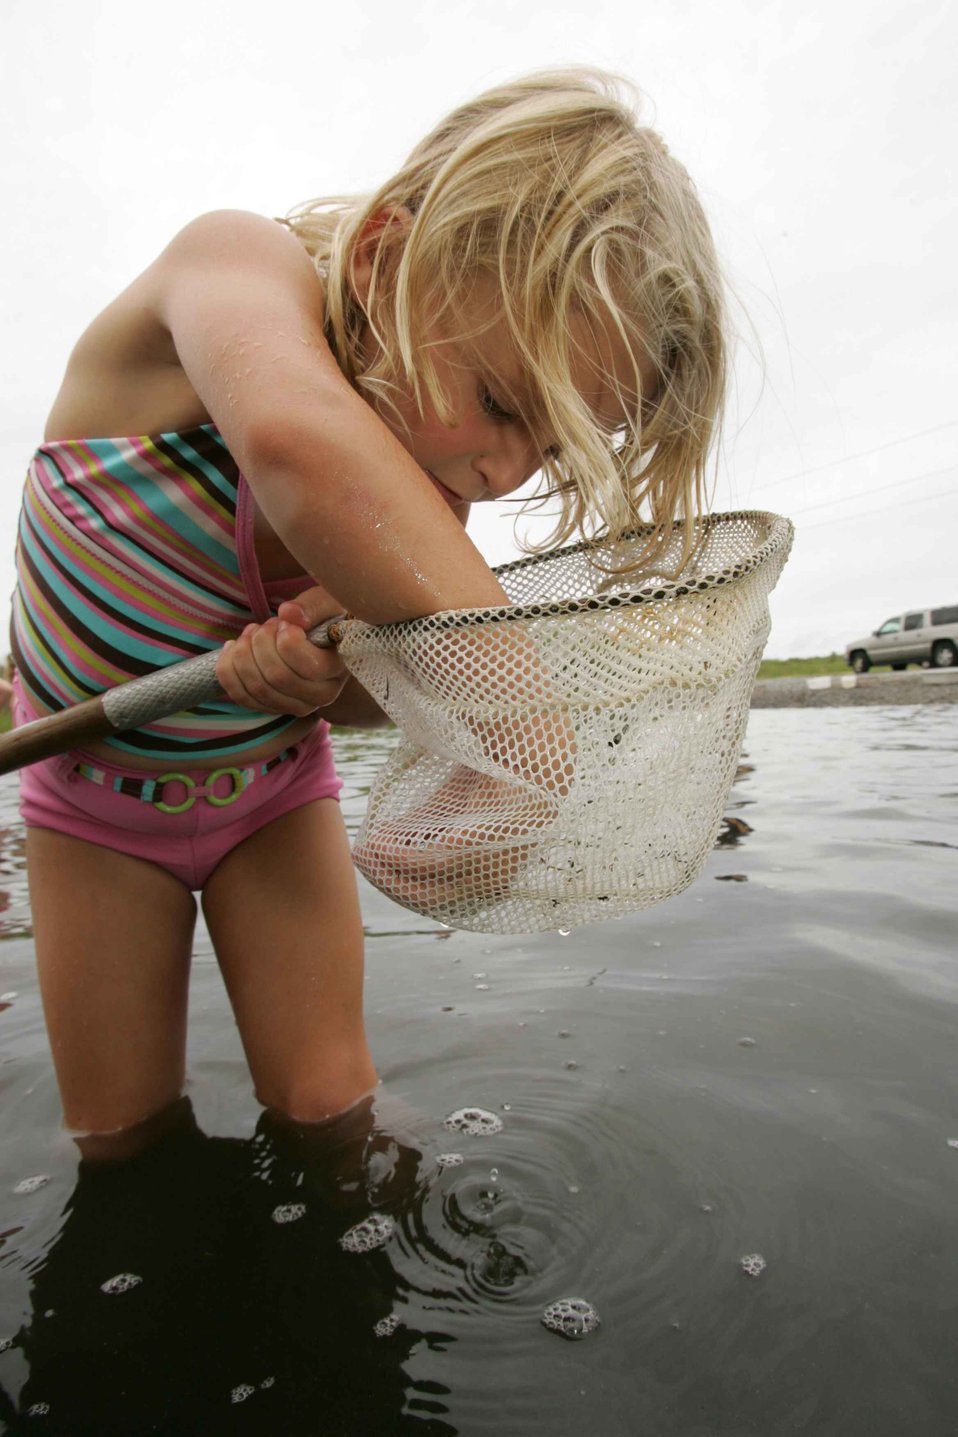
English:
Image title: Beautiful young child blonde girl playing with net Image from Public domain images website, http://www.public-domain-image.com/full-image/people-public-domain-images-pictures/children-kids-public-domain-images-pictures/beautiful-young-child-blonde-girl-playing-with-net.jpg.html